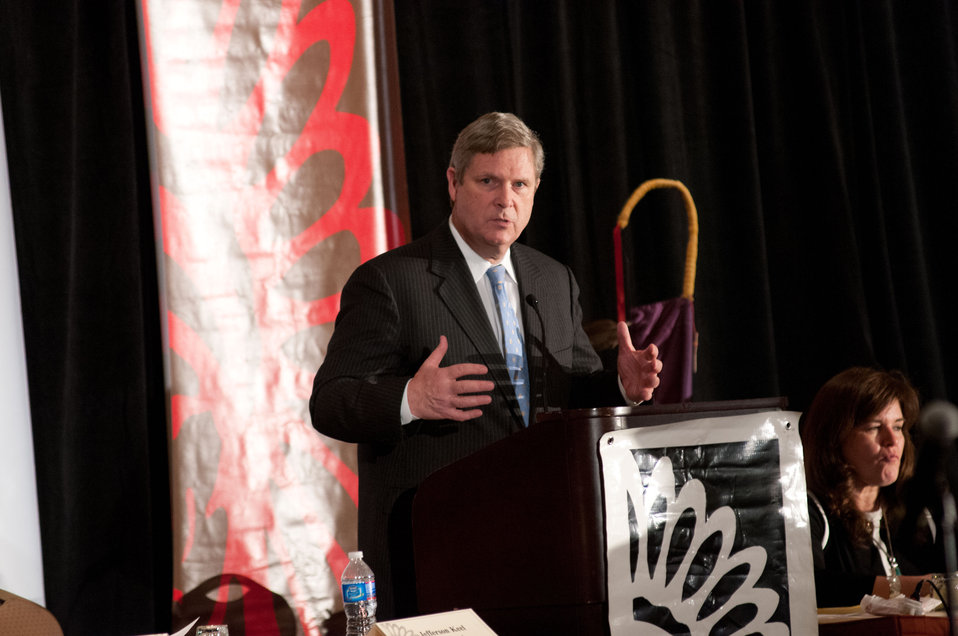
Agriculture Secretary Tom Vilsack responds to a question about Memorandums Of Agreement for tribal enterprises and employment opportunities on public lands, Agriculture Secretary Tom Vilsack listens to Affiliated Tribes of the Northwest Indians’ Fawn Sharp (far left) comment and invite the Secretary to a future event, at the National Congress of American Indians Tribal Nations Legislative Summit at L’Enfant Plaza Hotel in Washington, D.C., on Wednesday March 7, 2012. Secretary Vilsack has made improving relations with Native American Tribes a priority by creating the Office of Tribal Relations and directed all U.S. Department of Agriculture (USDA) agencies to be more aware of tribal issues and engage in tribal consultation and collaboration. Secretary Vilsack reiterated USDA’s support to Native American communities with financial support for electric, broadband and wastewater infrastructure, and providing families and businesses with home loans and business grants. Secretary Vilsack emphasized USDA’s participation in the First Lady’s Lets Move in Indian Country initiative to combat childhood obesity in tribal communities.